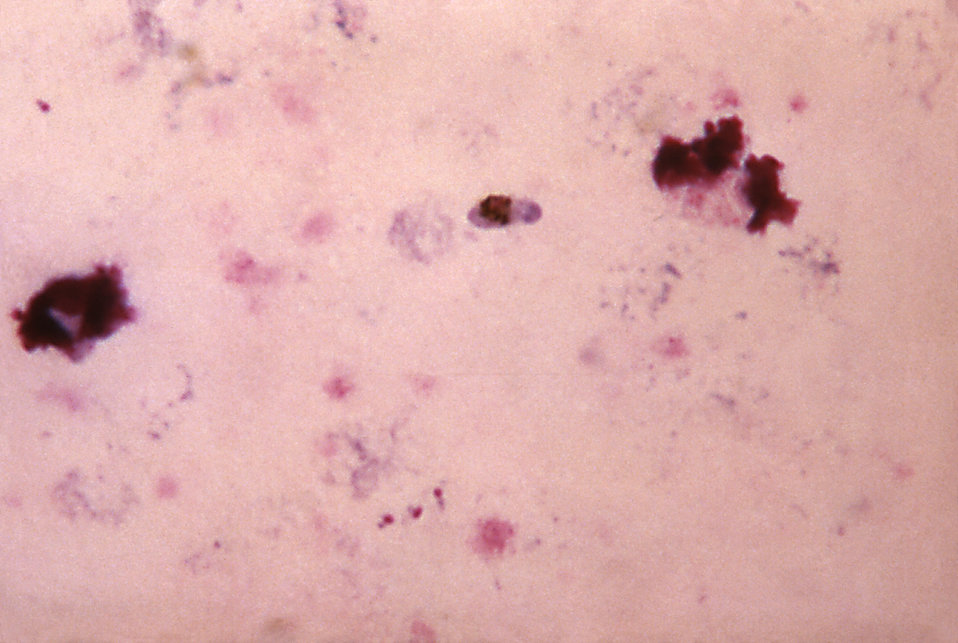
This thick film blood smear revealed a slightly ovoid P. falciparum gametocyte, and 3 ring staged organisms.